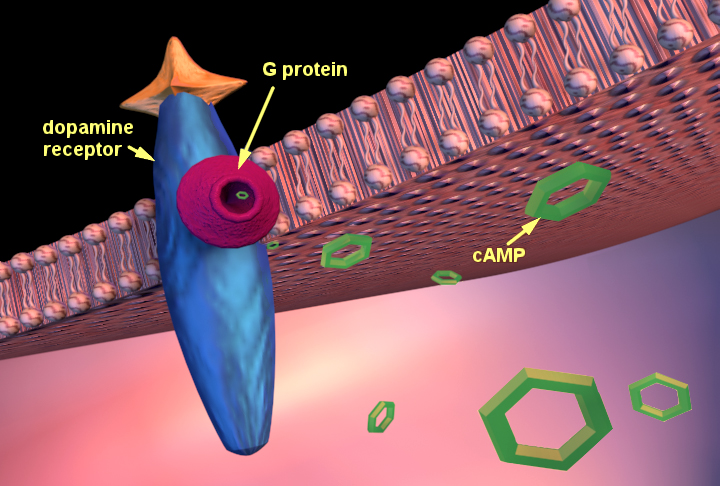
Dopamine and the production of cyclic AMP

When dopamine binds to its receptor, another protein called a G-protein (in pink) moves up close to the dopamine receptor. The G-protein signals an enzyme to produce cyclic adenosine monophosphate (cAMP) molecules (in green) inside the cell. cAMP controls many important functions in the cell including the ability of the cell to generate electrical impulses.